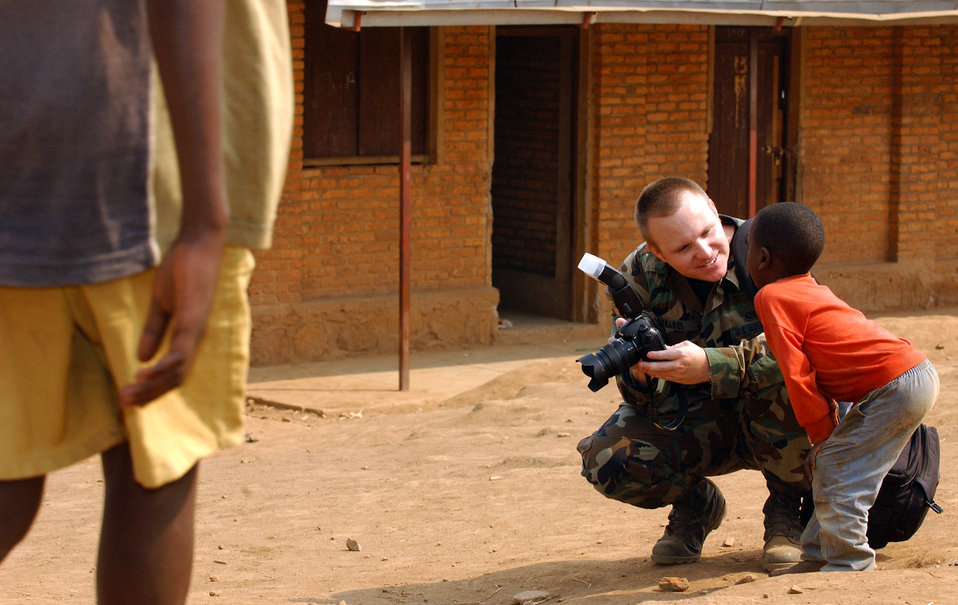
Airmen donate soccer balls, supplies to African school

KIGALI, Rwanda -- Senior Airman Mike Meares, of the 86th Air Expeditionary Group public affairs office, shows a local child his photo on the back of his digital camera July 28. The group donated soccer balls, soccer nets, candy and toys to the children attending the Nonko Primary School of Kigali-Kanombe, Rwanda. The United States provided transportation for 1,200 Rwandan forces to and back from Sudan in support of AMIS 2, the African Union Mission in Sudan. .